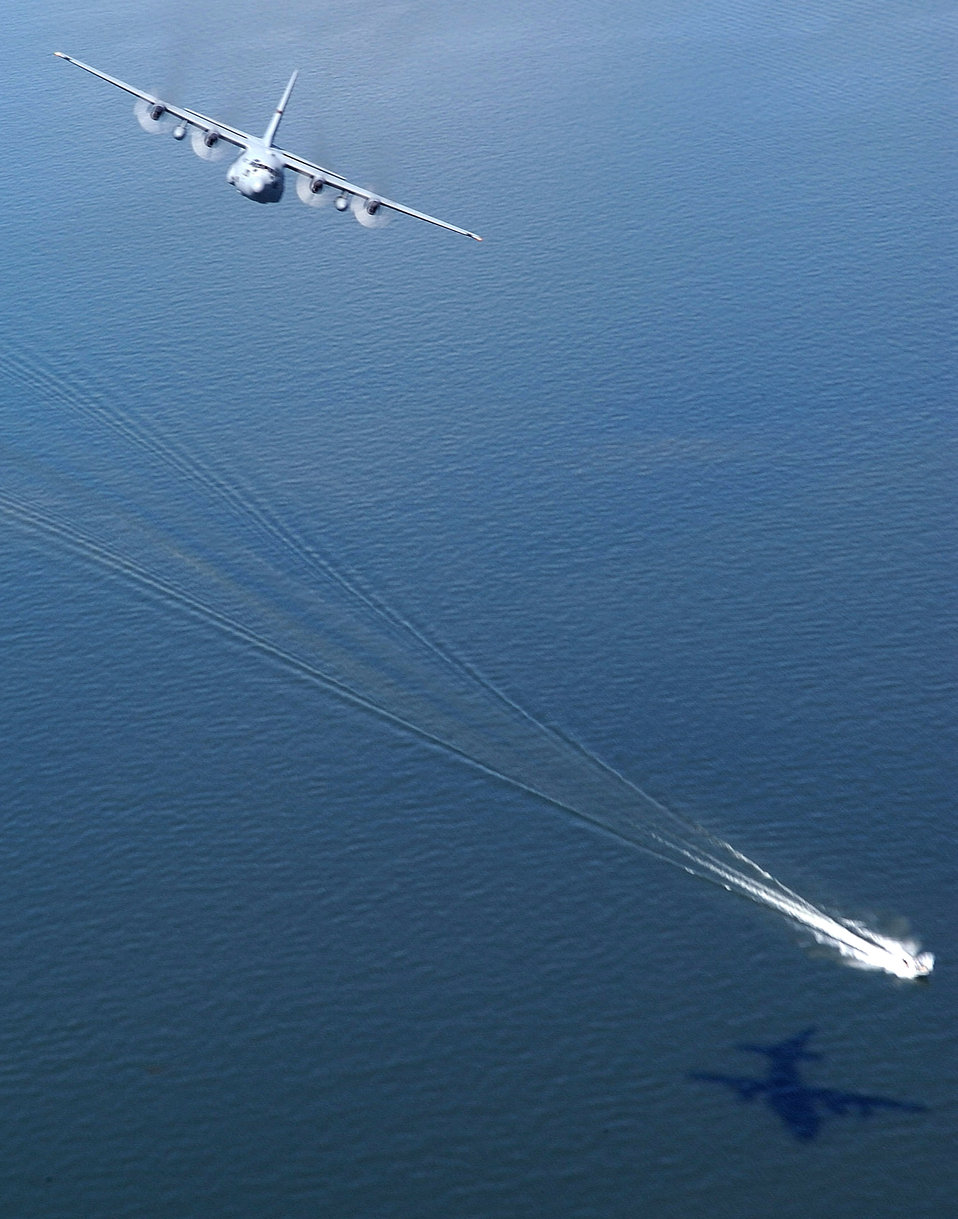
Soaring Hercules

A C-130 Hercules from the Minnesota Air National Guard's 133rd Airlift Wing flies over the Mille Lacs Lake area in northern Minnesota during a training mission Aug. 20.